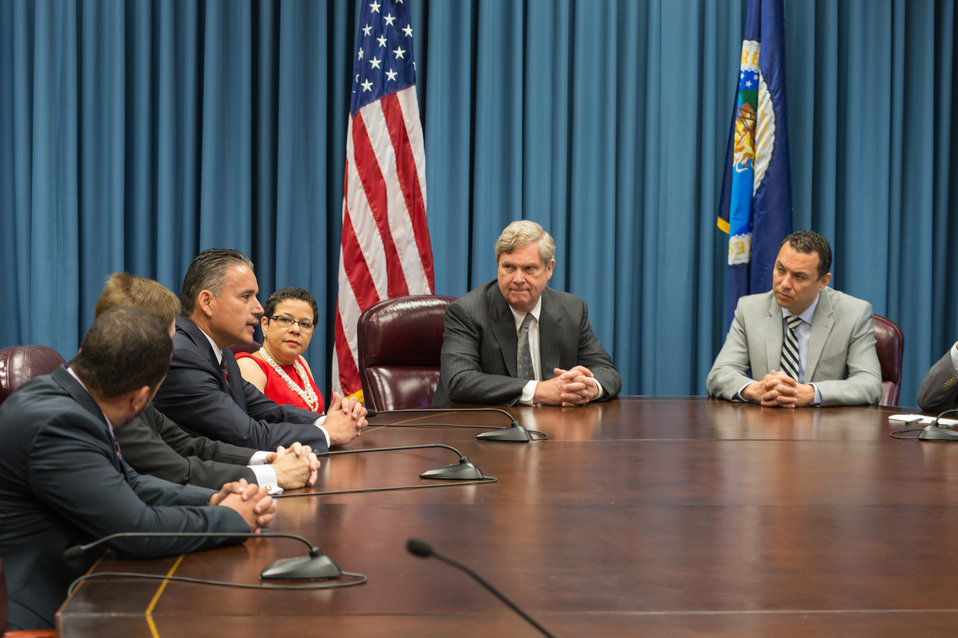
U.S. Department of Agriculture (USDA) Deputy Chief of Staff Oscar Gonzales, USDA General Council Ramona Romero, Agriculture Secretary Tom Vilsack, and National Hispanic Leadership Agreement and Labor Council Executive Director Hector Sanchez have a discussion prior to signing a Memorandum of Understanding (MOU) at USDA in Washington, D.C. on Thursday, May 22, 2014. Gonzales discussed his own experiences and USDA’s commitment to Hispanic employment and immigration reform.